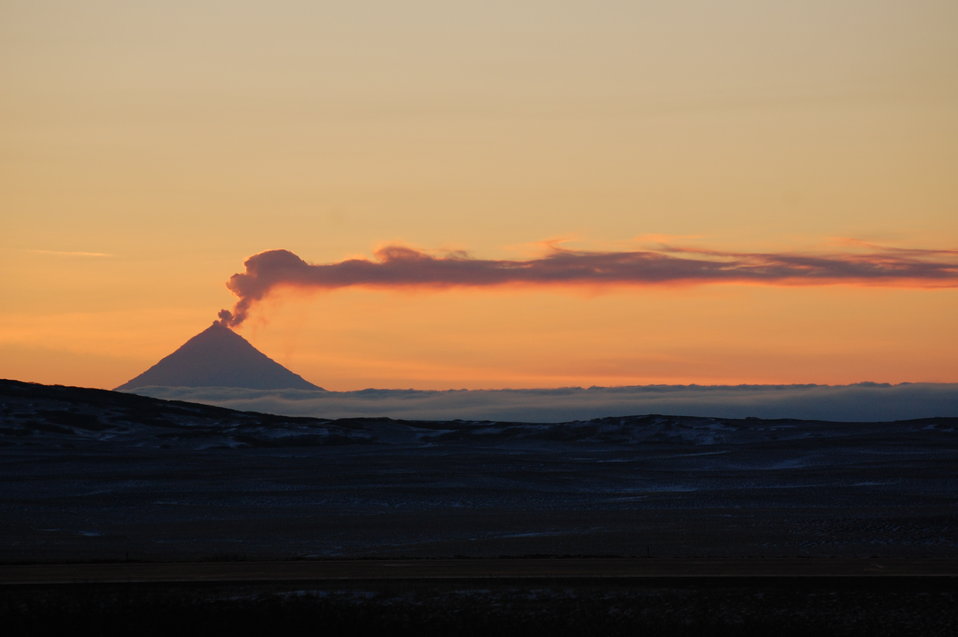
Shishaldin Volcano

Unimak Island, Alaska Maritime National Wildlife Refuge